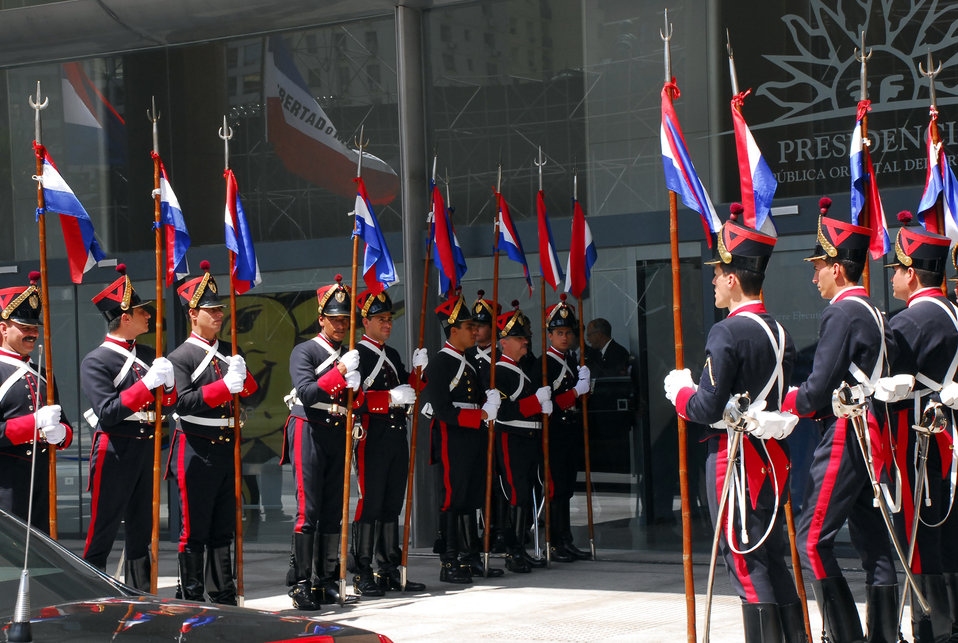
Secretary Clinton Meets With Uruguay President

Blandengues Corps await the arrival of U.S. Secretary of State Hillary Rodham Clinton and Uruguayan offficials to leave the Radisson Victoria Plaza Hotel after their meeting in Montevideo, Uruguay March 1, 2010.